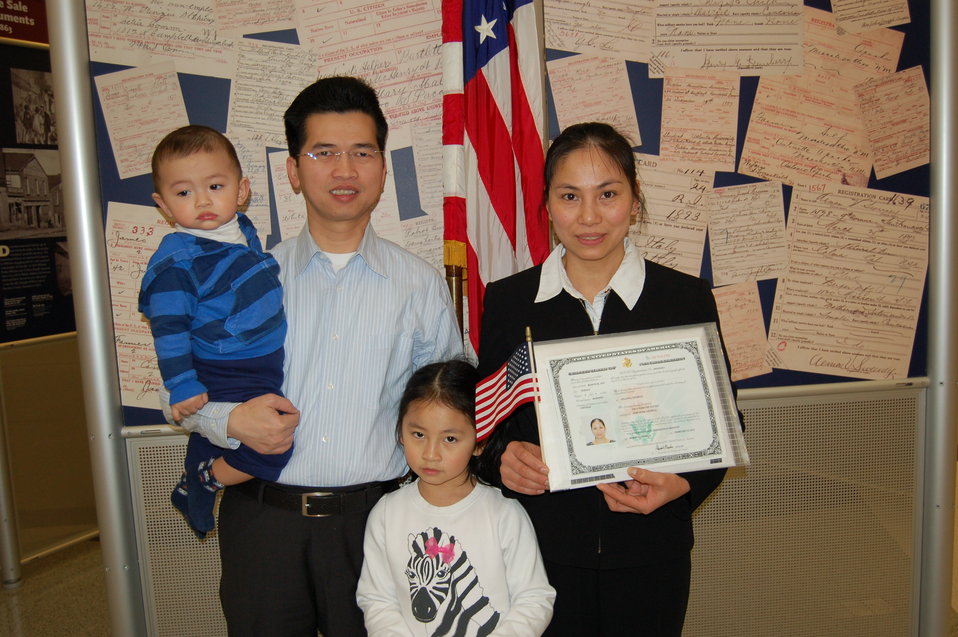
New Citizens